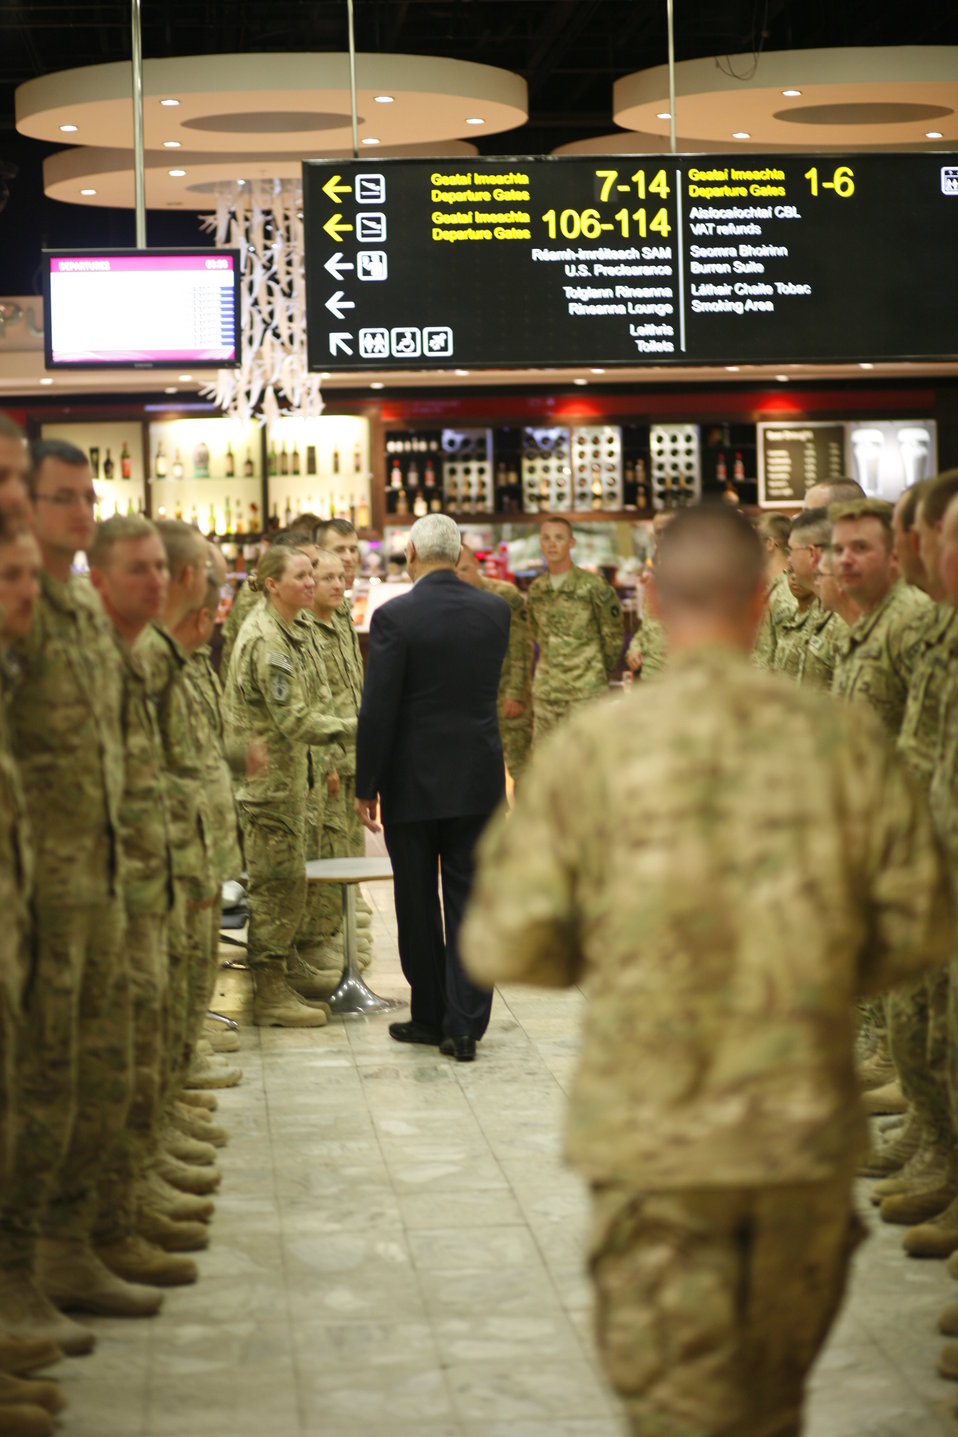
Former Secretary Powell Greets Servicemembers Returning From Afghanistan

Former Secretary of State Colin Powell of the U.S. Presidential Delegation greets servicemembers returning from Afghanistan at Shannon Airport in Ireland on July 7, 2011.